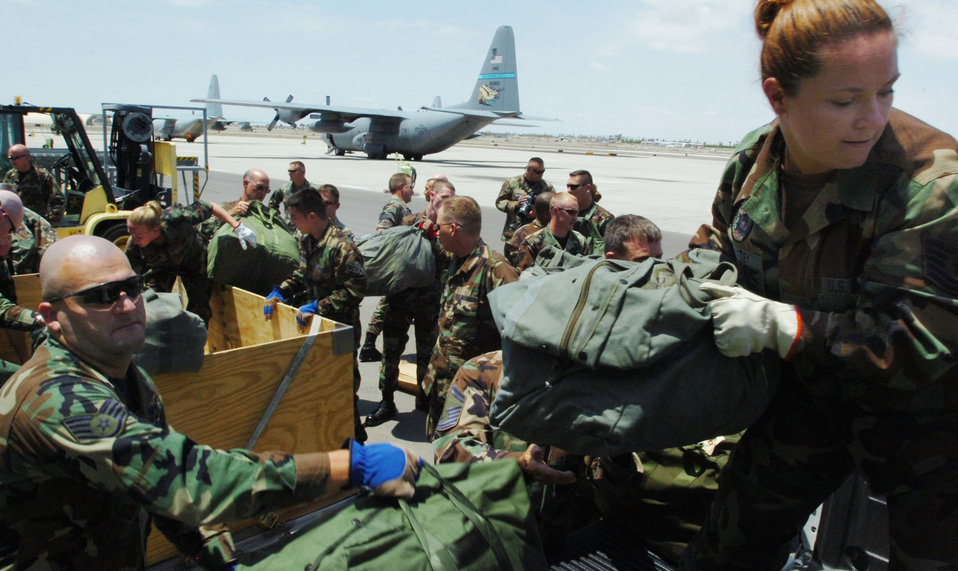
Operation Jump Start

Tech. Sgt. Cindy Swazey helps load bags at Marine Corps Air Station Yuma, Ariz., on July 29. She is among the Airmen from the Kansas Air National Guard's 184th Air Refueling Wing supporting Operation Jump Start. Airmen are providing support for guardsmen who are working with U.S. Customs and Border Protection.